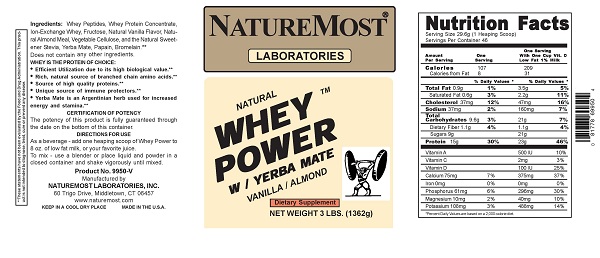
RECALLED - NatureMost Whey

October 23, 2013 – Product Recall – NATUREMOST LABORATORIES ISSUES ALLERGY ALERT ON UNDECLARED ALLERGENS IN PRODUCT.